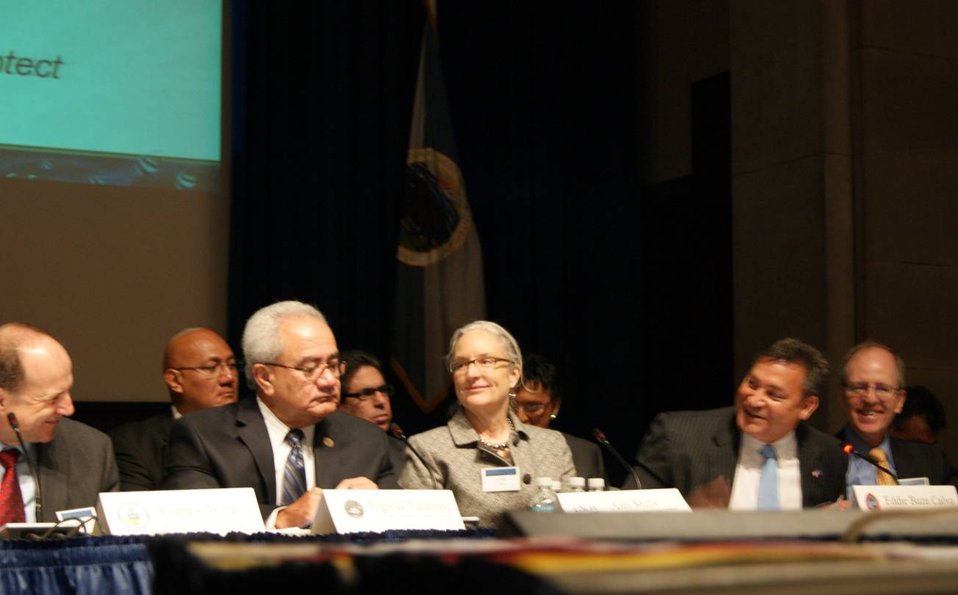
Coral Reef Task Force - Winter Meeting 2012